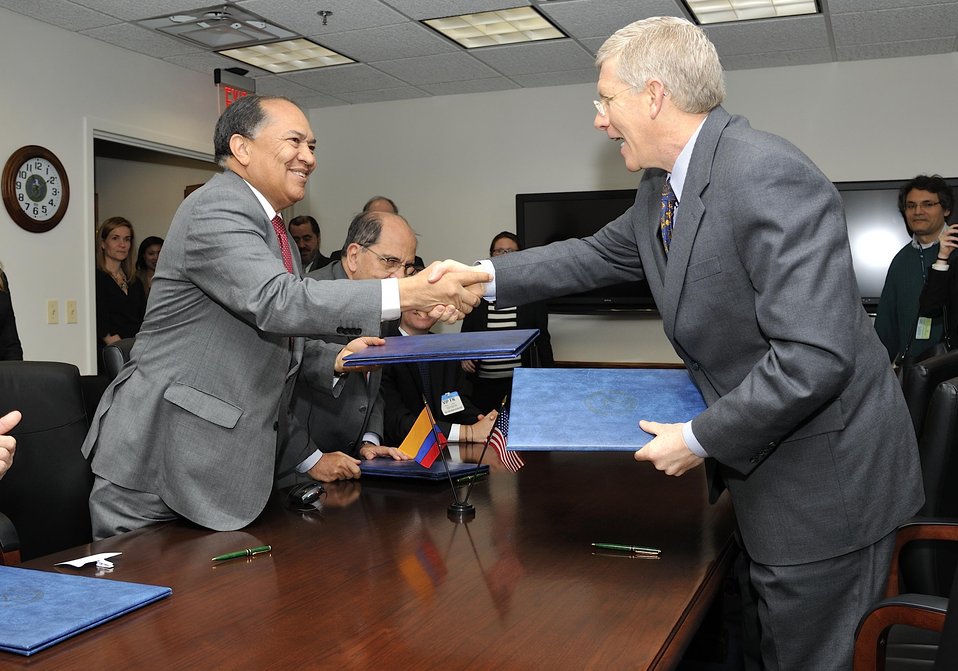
U.S. Deputy Secretary of Energy Daniel Poneman, Colombia's Minister of Energy and Mines Amylkar Acosta, Mayor of Santiago de Calí Rodrigo Guerrero, and Director of Planning of Colombia Tatyana Orozco signed a Memorandum of Understanding (MOU) to collaborate in the development of a Solar Decathlon Latin America and Caribbean competition.